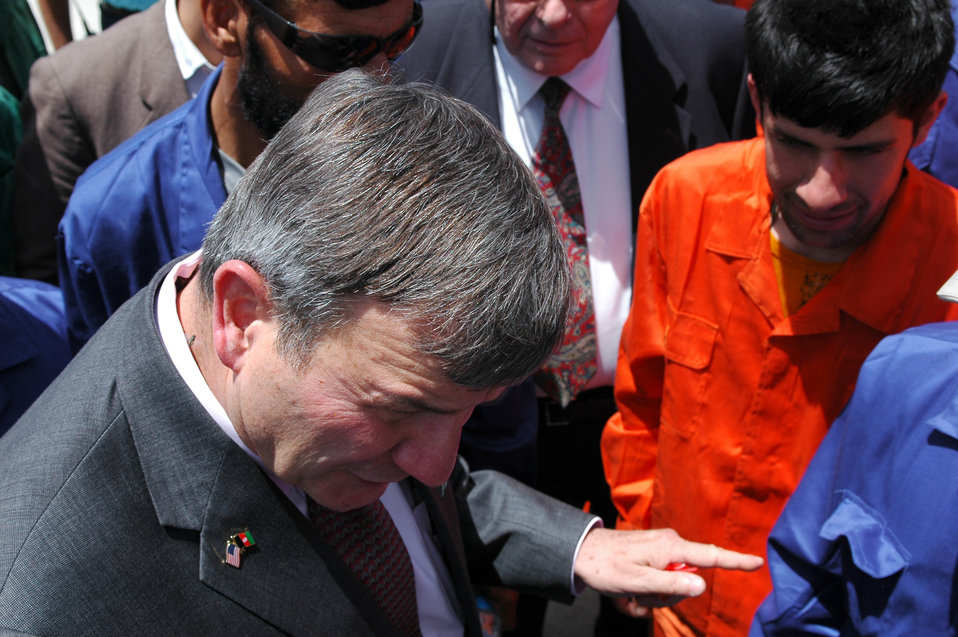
105 MW Tarakhil Power Plant Handover